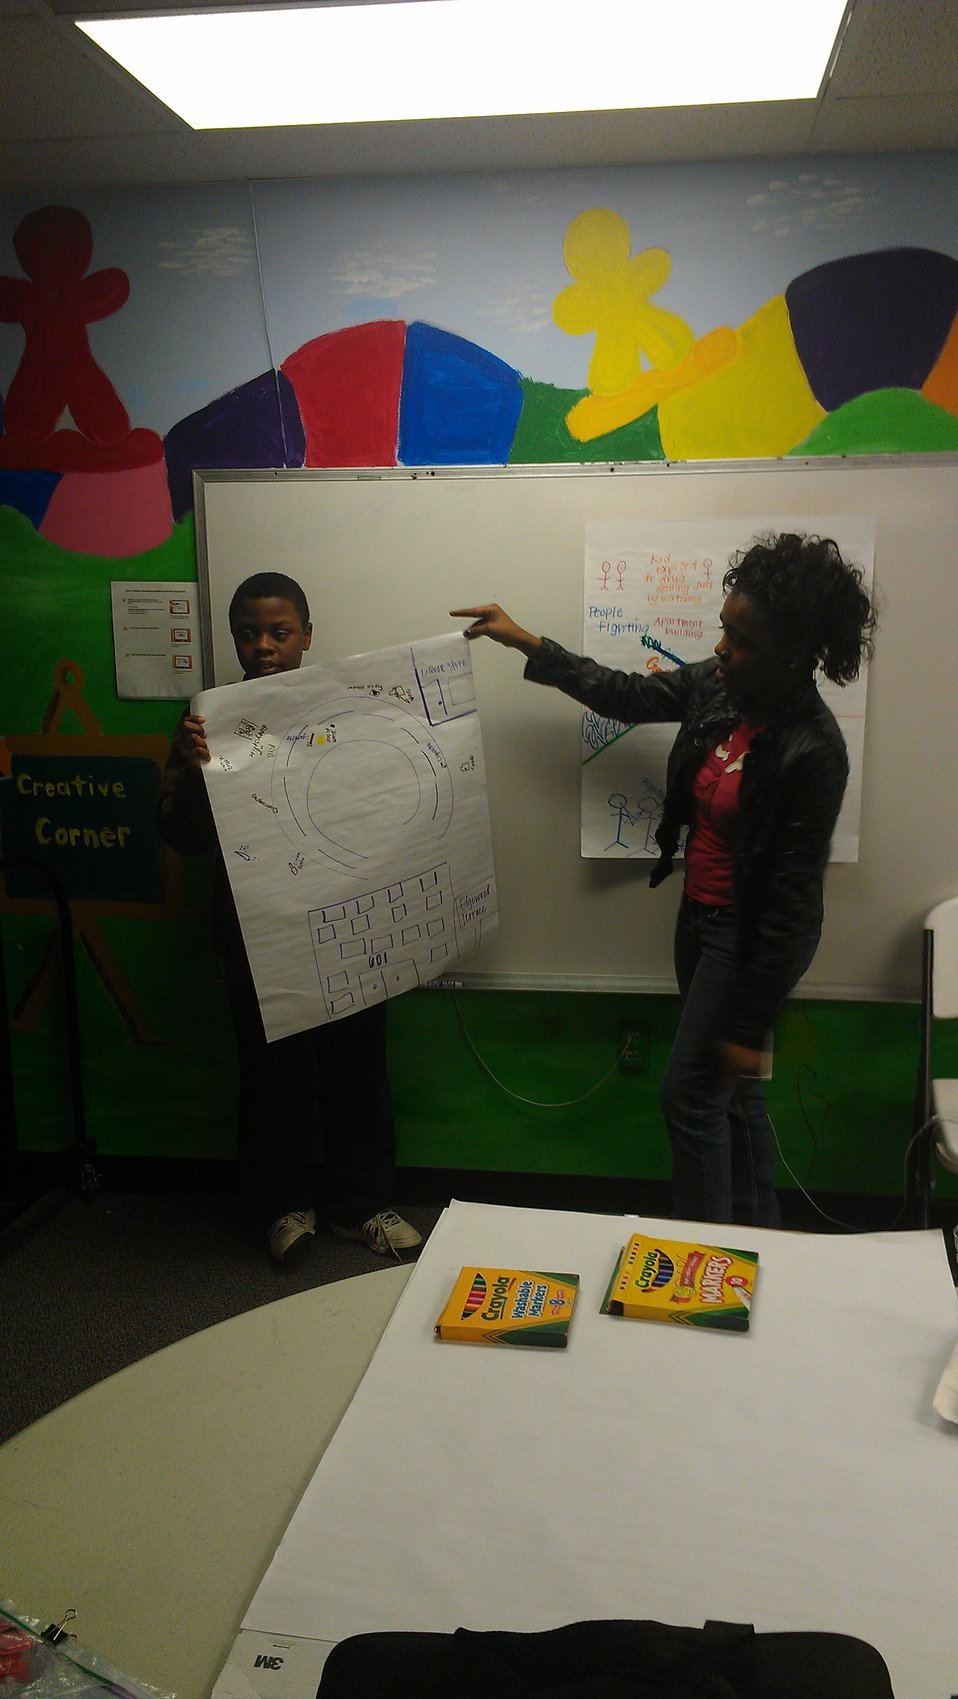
Washington, D.C. Youth, NDFW 2013

Sasha Bruce Youthwork, Inc. sponsor 2013 NDFW events for youth in Prevention Centers in Wards 5 & 6, Washington, D.C.